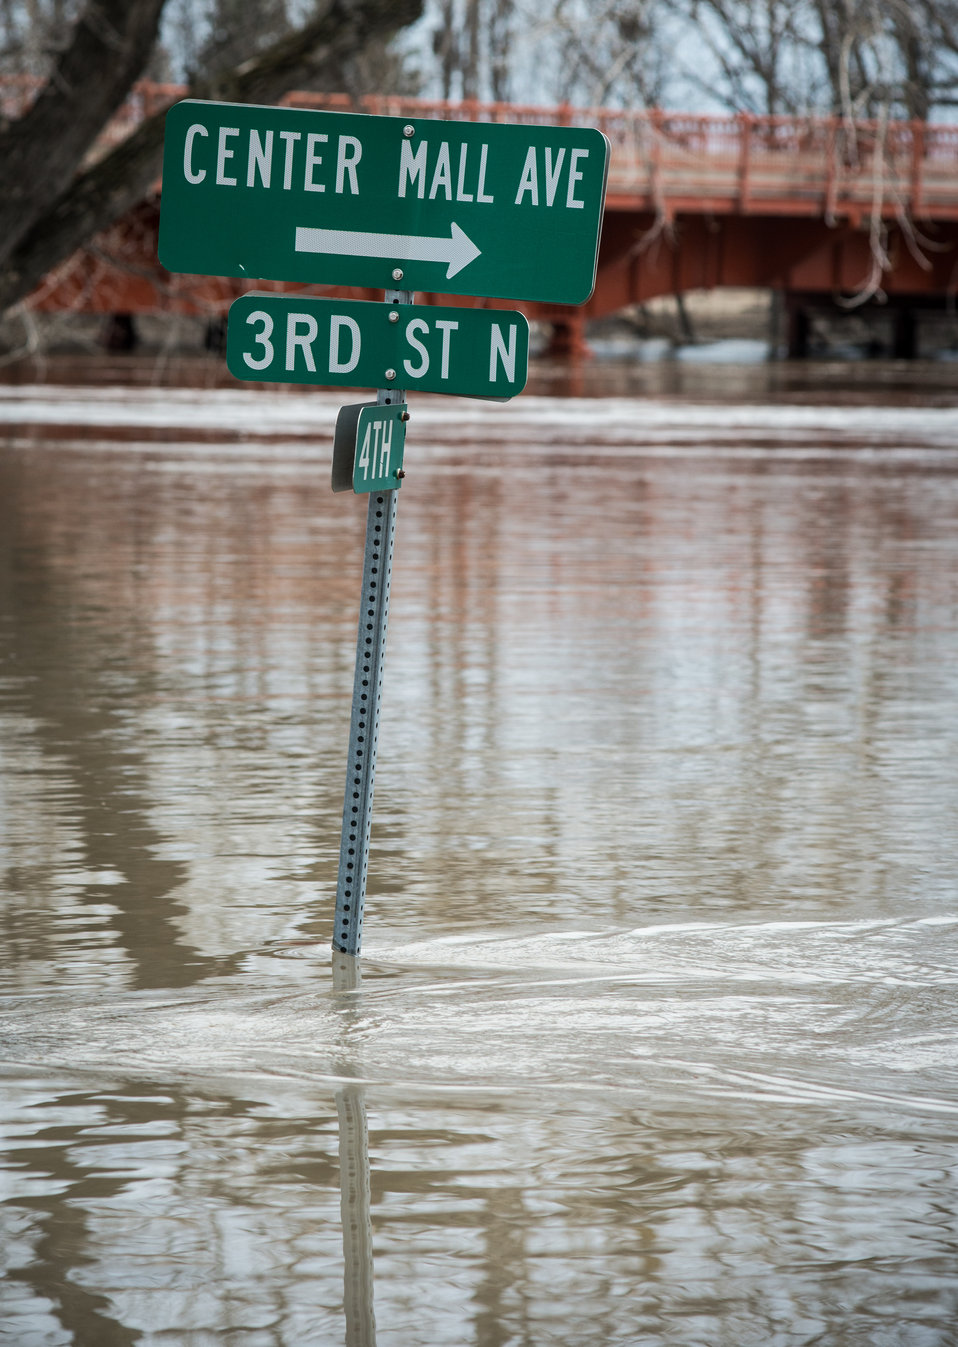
Northern Pacific Ave. Bridge seen from Center Mall Ave. and 3rd St. N., in Moorhead, MN. on Monday, April 29, 2013. To learn about the Red River Basin Initiative, see www.mn.nrcs.usda.gov/news/features13/RRBI.html.